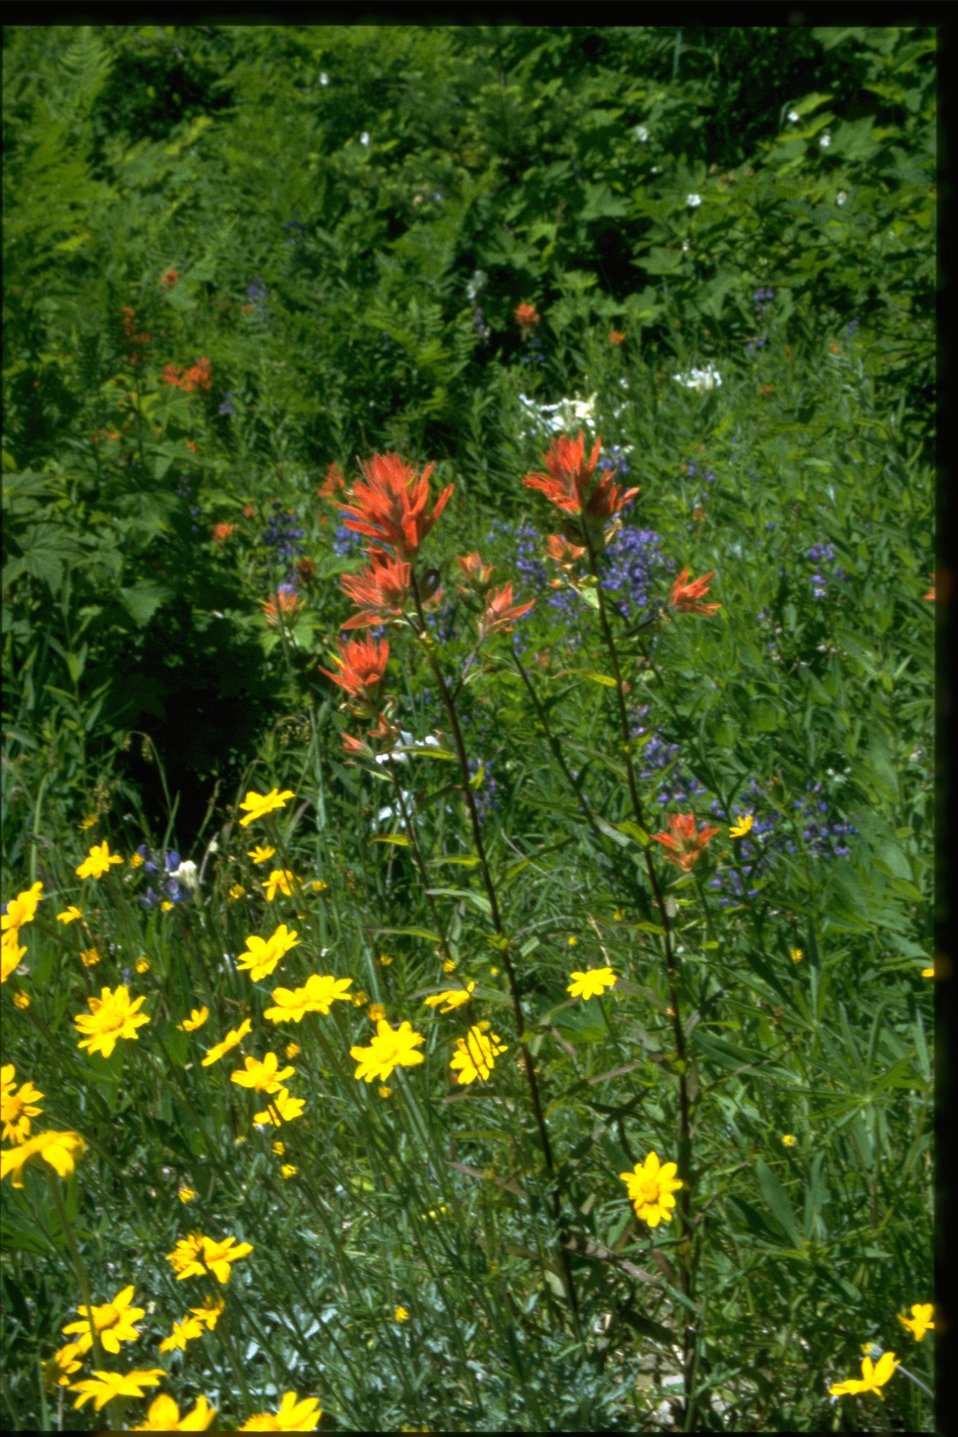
Medium shot of Asteraceae, Eriophyllum lanatum.